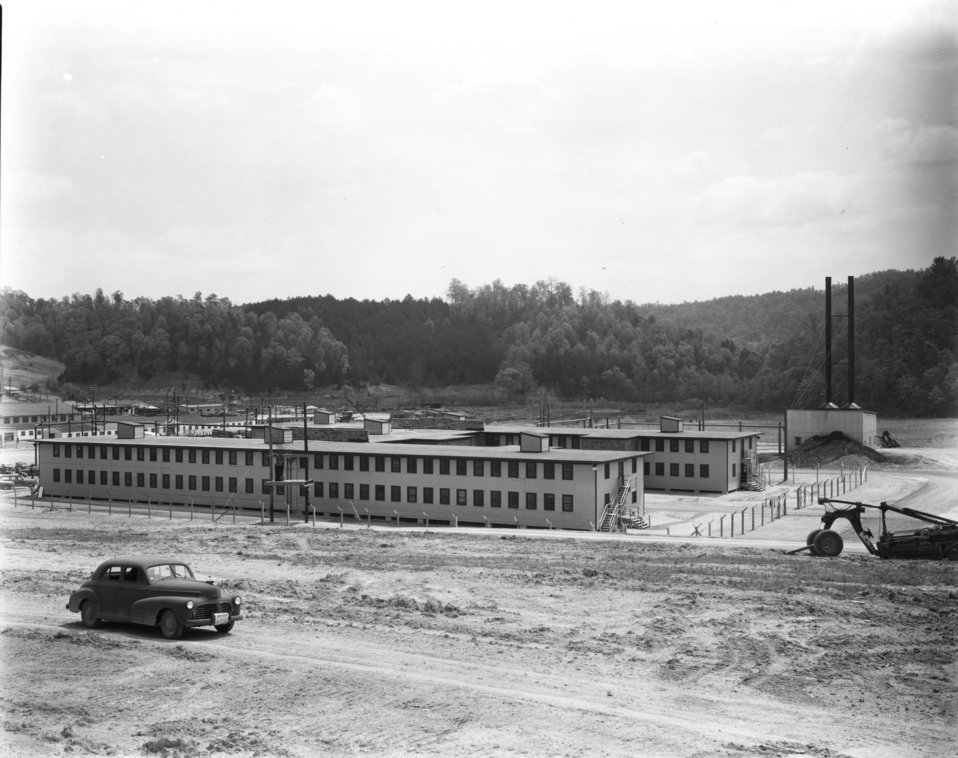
X-10 at Oak Ridge